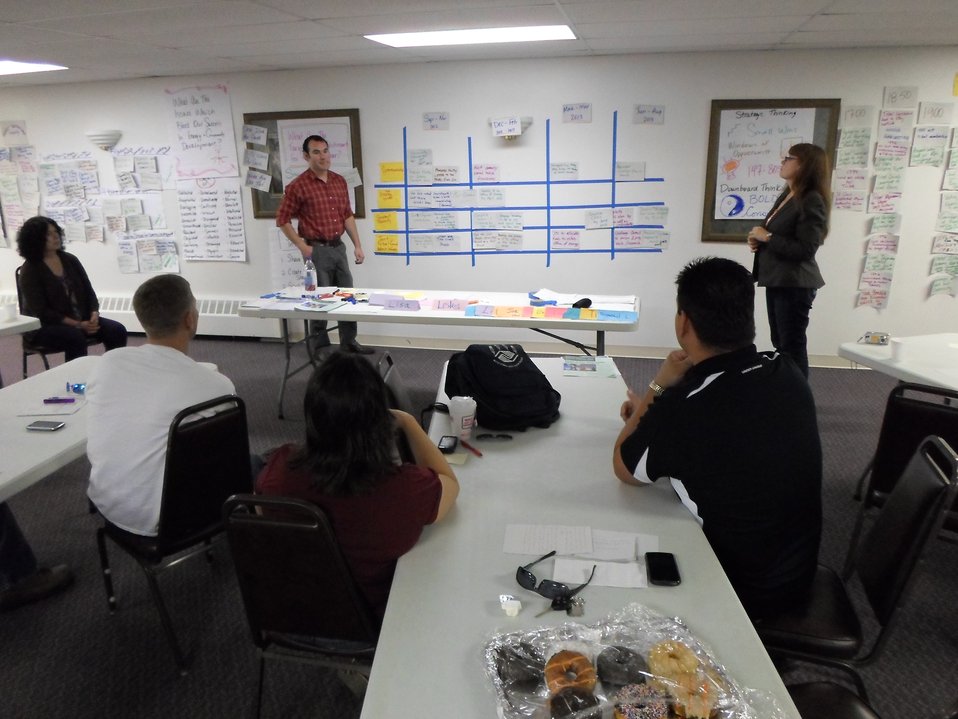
Strategic Technical Assistance Response Team (START) Program

January 3, 2012 - The START energy planning workshop held at the Passamaquoddy Tribes of Indian Township and Pleasant Point in Maine helped open the lines of communication between two reservations that exist under a single Tribe.